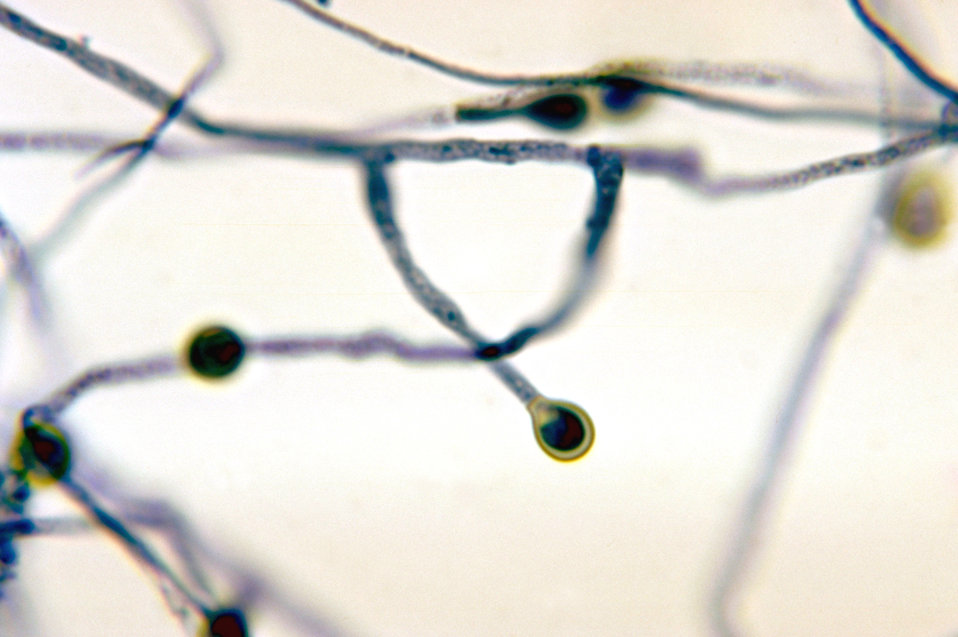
This photomicrograph reveals the conidiophores with conidia of the fungus Pseudallescheria boydii from a slide culture.